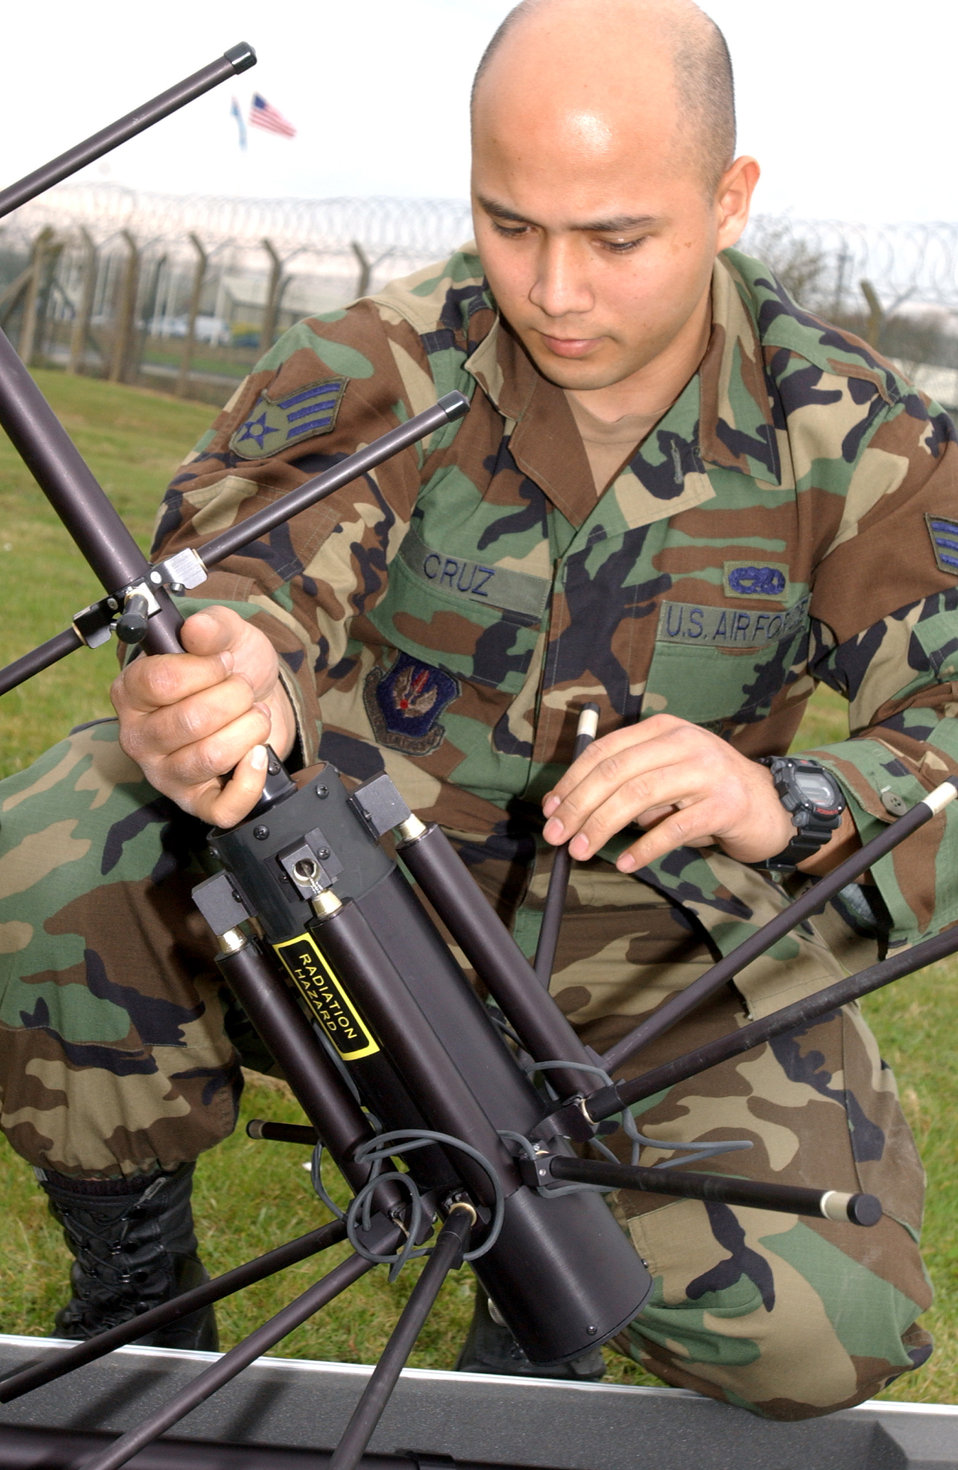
Analyze this!

MAXWELL AIR FORCE BASE, Ala. -- Senior Airman Toni Bush of the 187th Medical Squadron loads a serum sample into a blood chemistry analyzer. Airman Bush is an Air National Guardsman and is training with the 42nd Medical Group here.